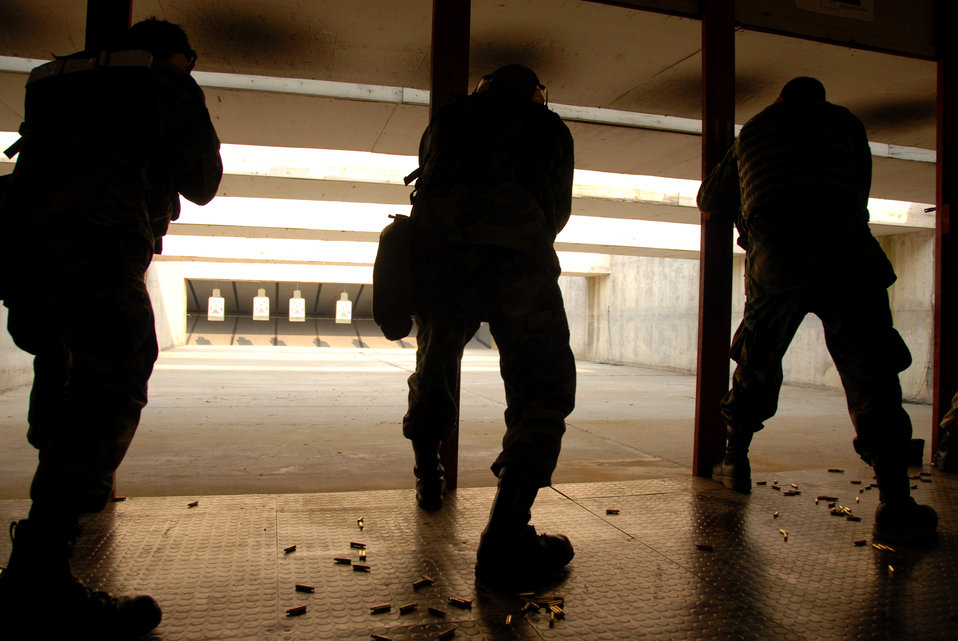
Keep firing

Airmen test their skills at the Osan Air Base, South Korea, shooting range March 15. .